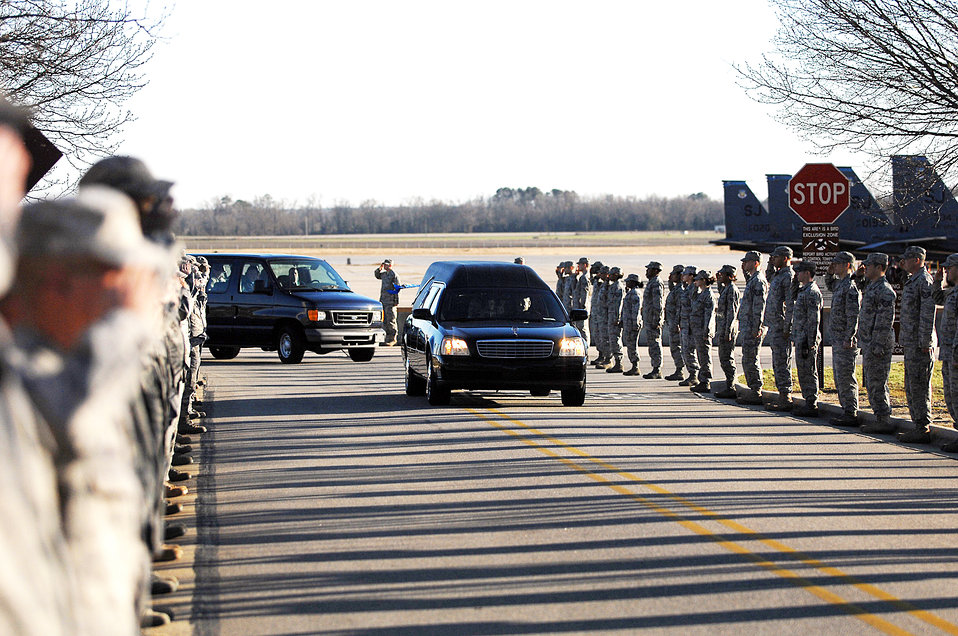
Team Seymour honors fallen Airman

Members of the 4th Fighter Wing salute as the hearse carrying the remains of Tech. Sgt. Adam Ginett passes during a dignified transfer ceremony Jan. 25, 2010, at Seymour Johnson Air Force Base, N.C.